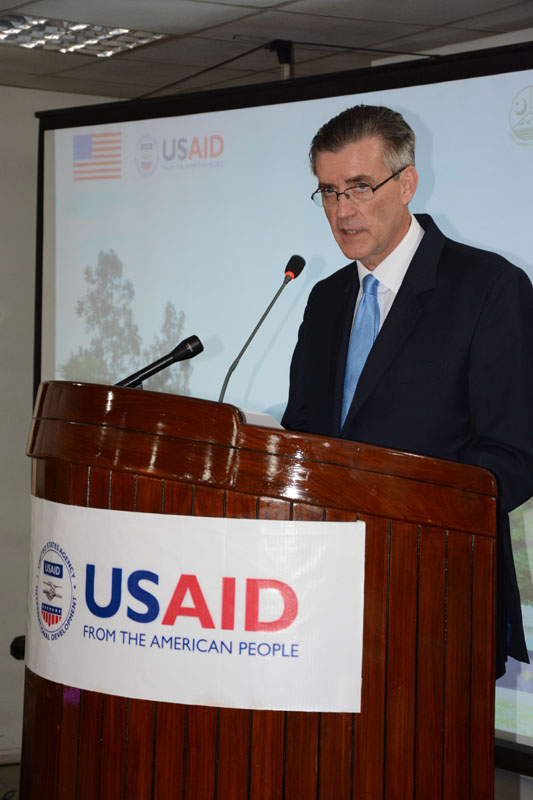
The United States Ambassador to Pakistan, Richard Olson broke ground for a U.S. funded construction of a new Faculty of Education building in Muzaffarabad, AJK. 27